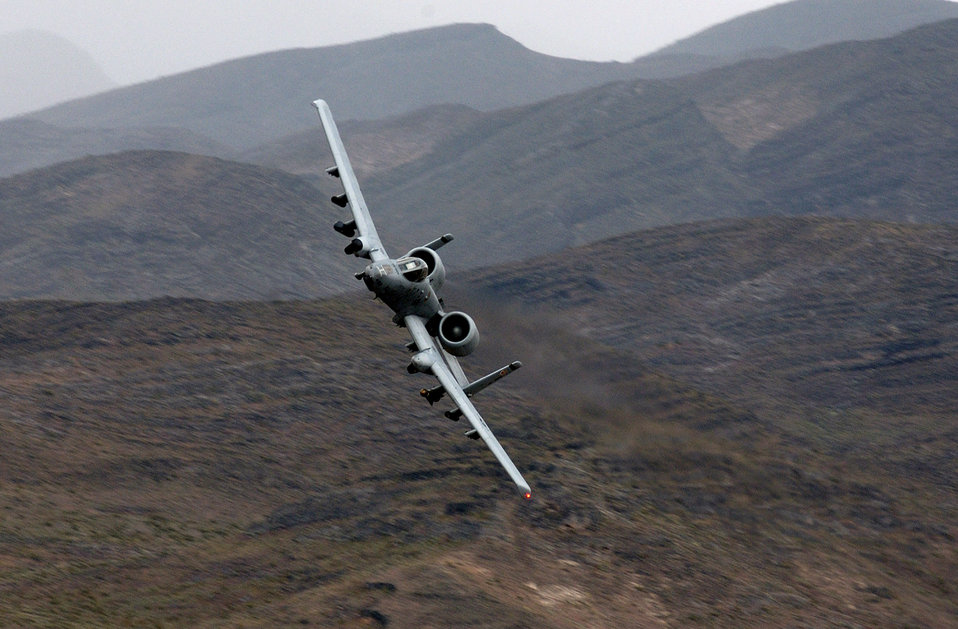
Bolting through the sky

NELLIS AIR FORCE BASE, Nev. -- An A-10 Thunderbolt II maneuvers through a mountain pass during a close-air support mission May 5. A-10s are specially designed for close-air support of ground forces. They are simple, effective and survivable twin-engine jet aircraft that can be used against ground targets, including tanks and other armored vehicles. This aircraft is assigned to the 66th Weapons Squadron here.